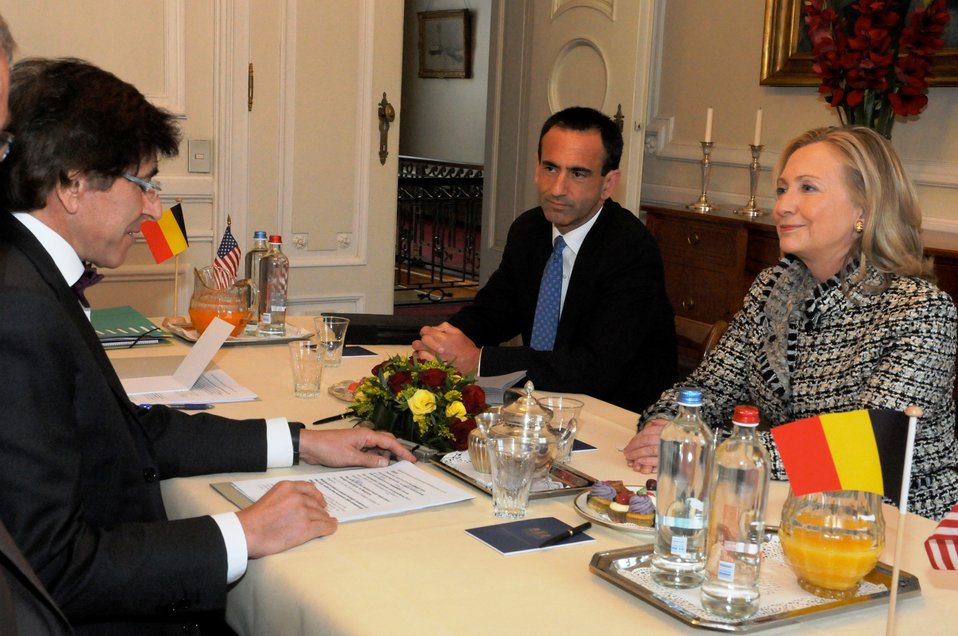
Secretary Clinton and Assistant Secretary Gordon Meet With Belgian Prime Minister Di Rupo

U.S. Secretary of State Hillary Rodham Clinton, accompanied by Assistant Secretary of State for European and Eurasian Affairs Philip Gordon, meets with Belgian Prime Minister Elio Di Rupo at the Prime Minister's residence in Brussels, Belgium, on April 18, 2012.